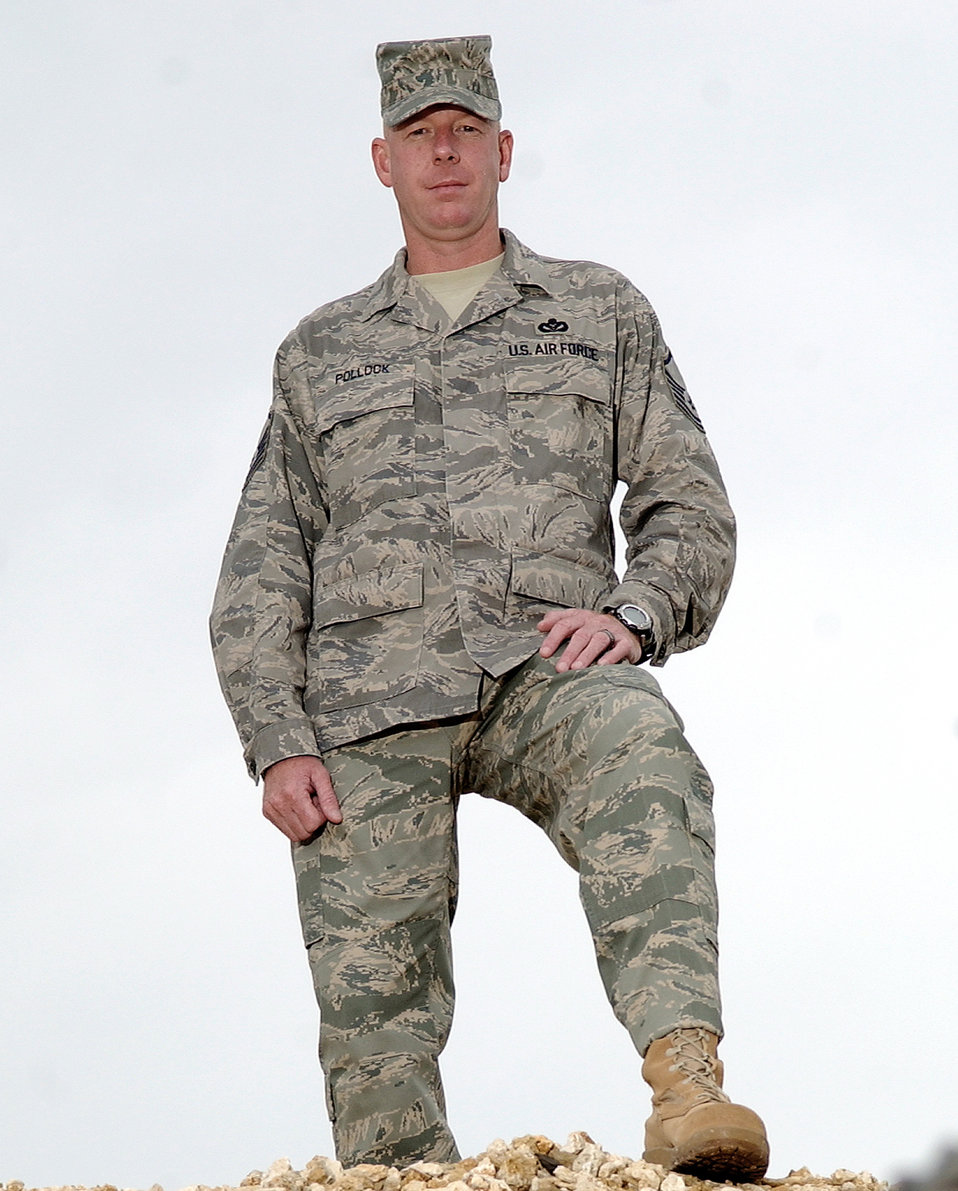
12 Outstanding Airmen of the Year

Master Sgt. Christopher Pollock, 18th Civil Engineer Squadron superintendent of heavy repair at Kadena Air Base, Japan, was the Task Force Anzio Brigade engineer based out of Kandahar Airfield, Afghanistan during his deployment. He was the sole U.S. engineer tasked with construction on Kandahar and six isolated remote forward operating bases throughout Regional Command South and West. The Air Force Chief of Staff reviews the selections. The selections for the 2009 12 Outstanding Airmen of the Year were announced July 2 by Air Force officials at Randolph Air Force Base, Texas.